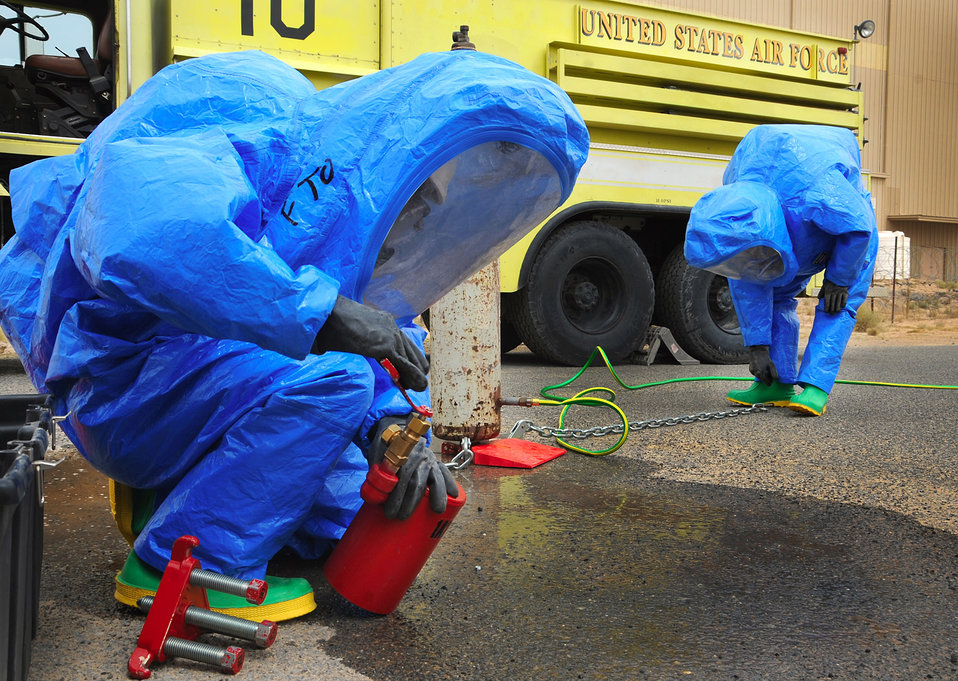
That should do it!

A firefighter with the 386th Expeditionary Civil Engineer Squadron at an air base in Southwest Asia prepares a cap to seal a leaking valve during a hazardous material technical training exercise. It is a Department of Defense requirement that all Air Force firefighters be certified to the hazmat technical level.